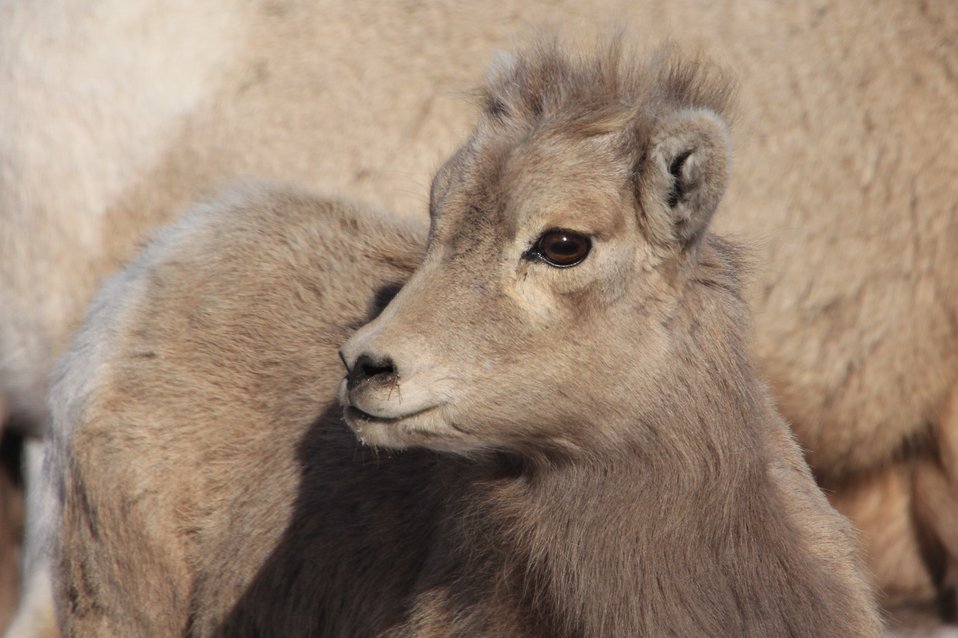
Bad Hair Day

A bighorn sheep lamb presents a nice profile as it stands near its mother.

Credit: USFWS / Ann Hough, National Elk Refuge volunteer